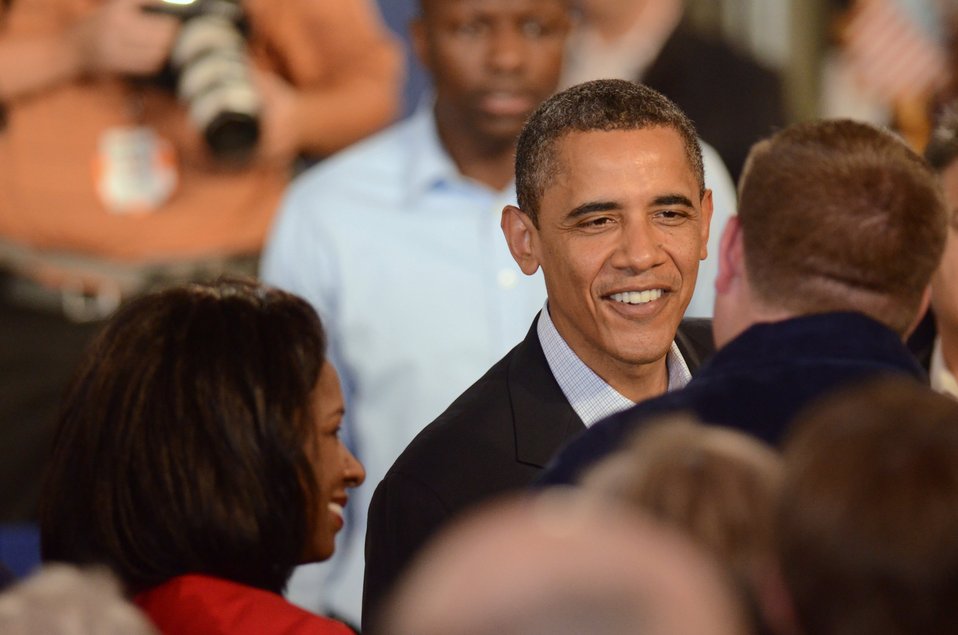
President Barack Obama shakes hands with members of the audience at the Northeast Iowa Community College, for a White House Rural Economic Forum on Tuesday, Aug. 16, 2011. The President’s visit will focus on agriculture’s contribution to the national economy, and how to create more jobs in rural America.